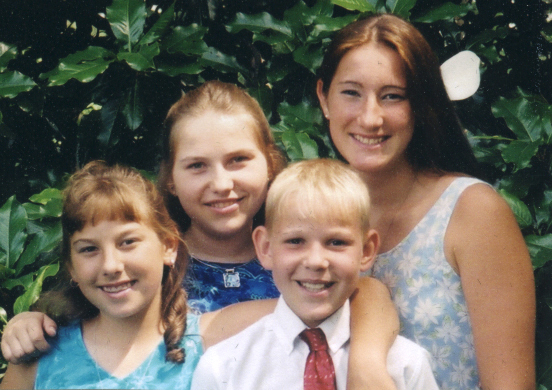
AF family gives to Chernobyl children health, hope

LANGLEY AIR FORCE BASE, Va. -- (From left) Hannah, Irena, Edgor and Catherine pose for a photo during the summer of 2003. Hannah and Catherine are the daughters of Tech. Sgt. Mike and Brenda Kelly of the 1st Component Maintenance Squadron here. The Kellys invited Irena and Edgor, who are affected by contamination from the Chernobyl accident, to visit with them each summer.